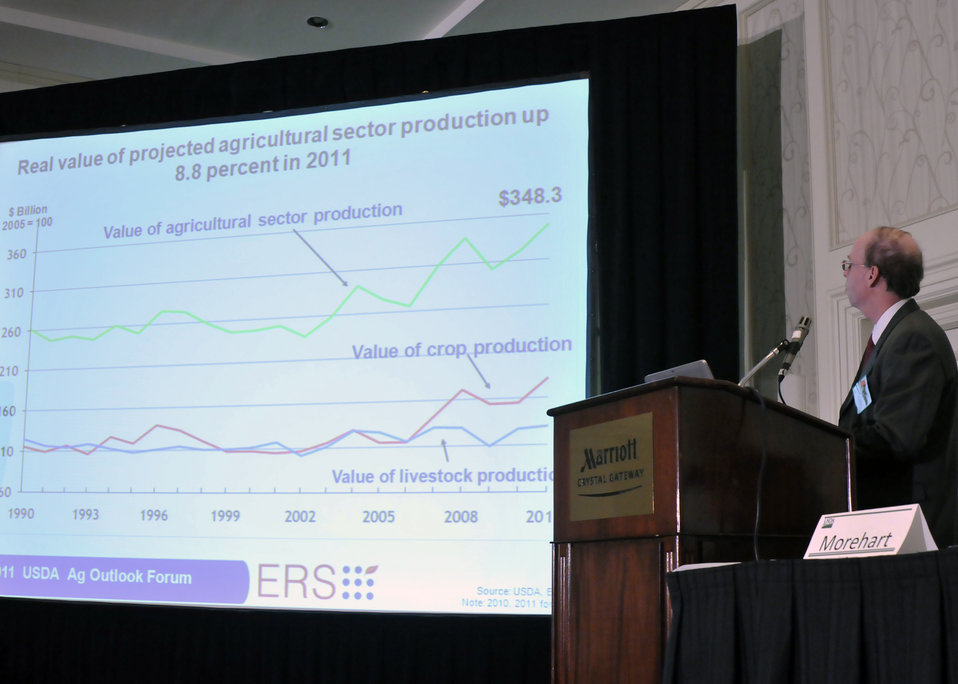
Timorhy Park, Economist, Farm and Rural Business Branch, Resources & Rural Economics Division, Economic Reserch Service, U.S. Department of Agriculture makes his presentation on Income Outlook for U.S. Farm Sector in 2011, at the Land Tenure Issues & Income breakout session at the World Agriculture Outlook Board Forum in Arlington, VA, on Thursday, February 24, 2011.